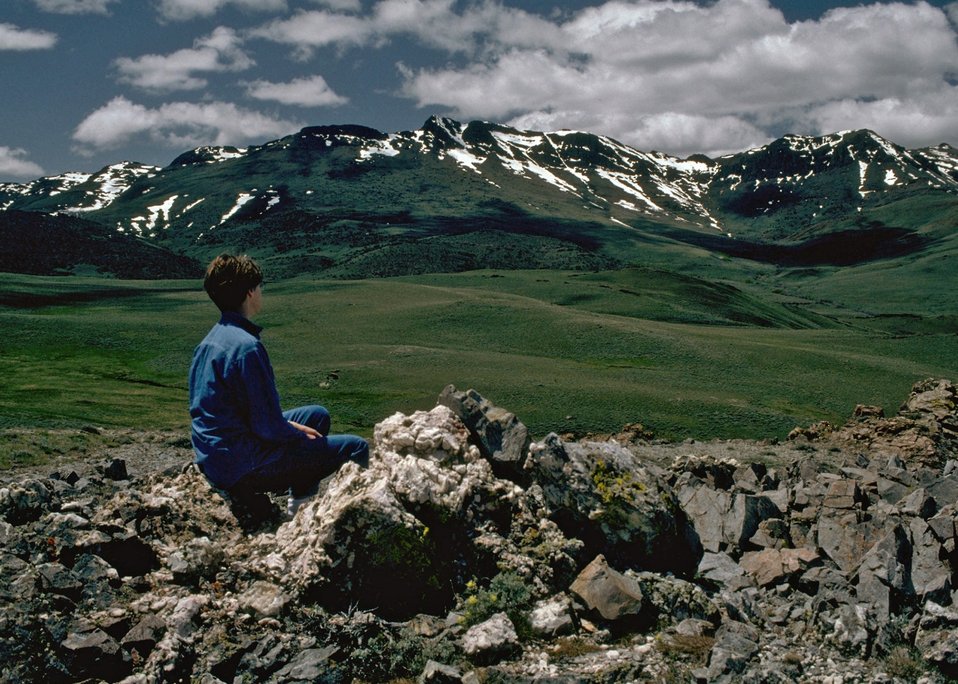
Sight Seeing at Pueblo Mountain in the Pueblo Mountains in Southeastern Oregon.